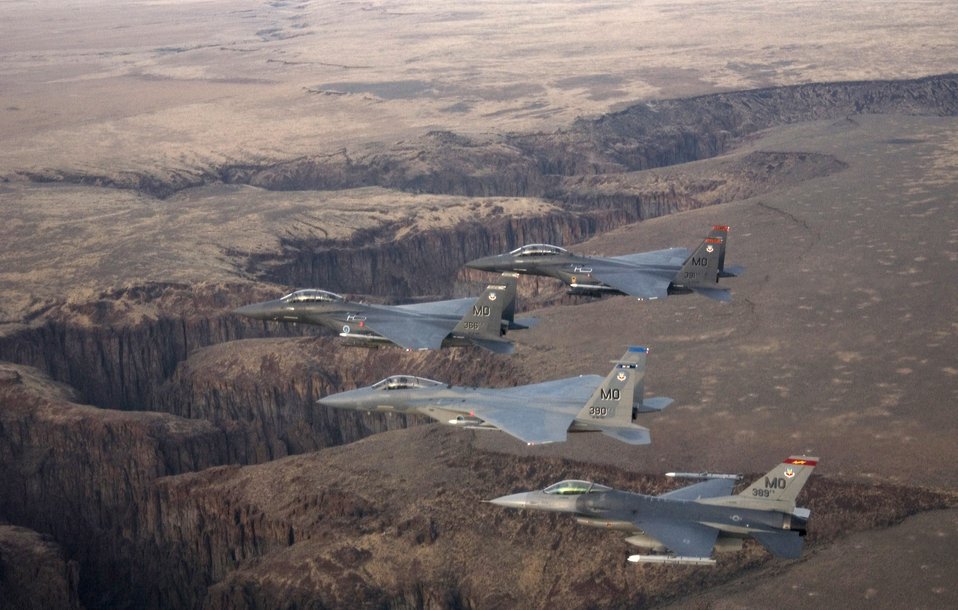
Flying over Idaho

A four-ship formation flies out to the Idaho training ranges Nov. 1. Col. Anthony Rock, 366th Fighter Wing commander, led the formation of two F-15 Strike Eagles, an F-15 Eagle and an F-16 Fighting Falcon from the 366th FW at Mountain Home Air Force Base, Idaho. The 366th FW began the first phase of its F-16 Fighting Falcon drawdown when five jets departed the base Nov. 2. The departure is part of the wing's realignment.